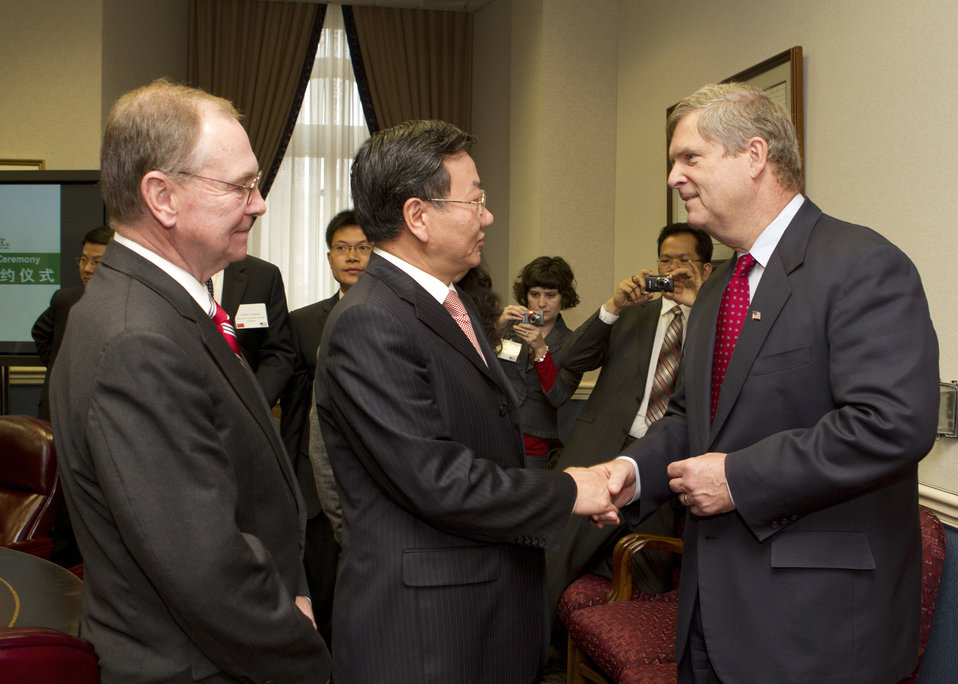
(L to R) Under Secretary for Farm and Foreign Agricultural Services Jim Miller, People’s Republic of China Vice Minister of Commerce Jaing Zengwei, and Agriculture Secretary Tom Vilsack meet before the signing agreement held at the U.S. Department of Agriculture in Washington, D.C., on November 22, 2010. The agreement is with a Chinese buying delegation and the U.S. soybean industry, indicating that the Chinese intend to purchase up to eight million metric tons of U.S. soybeans, valued at $3 billion. USDA photo 10di1559-765